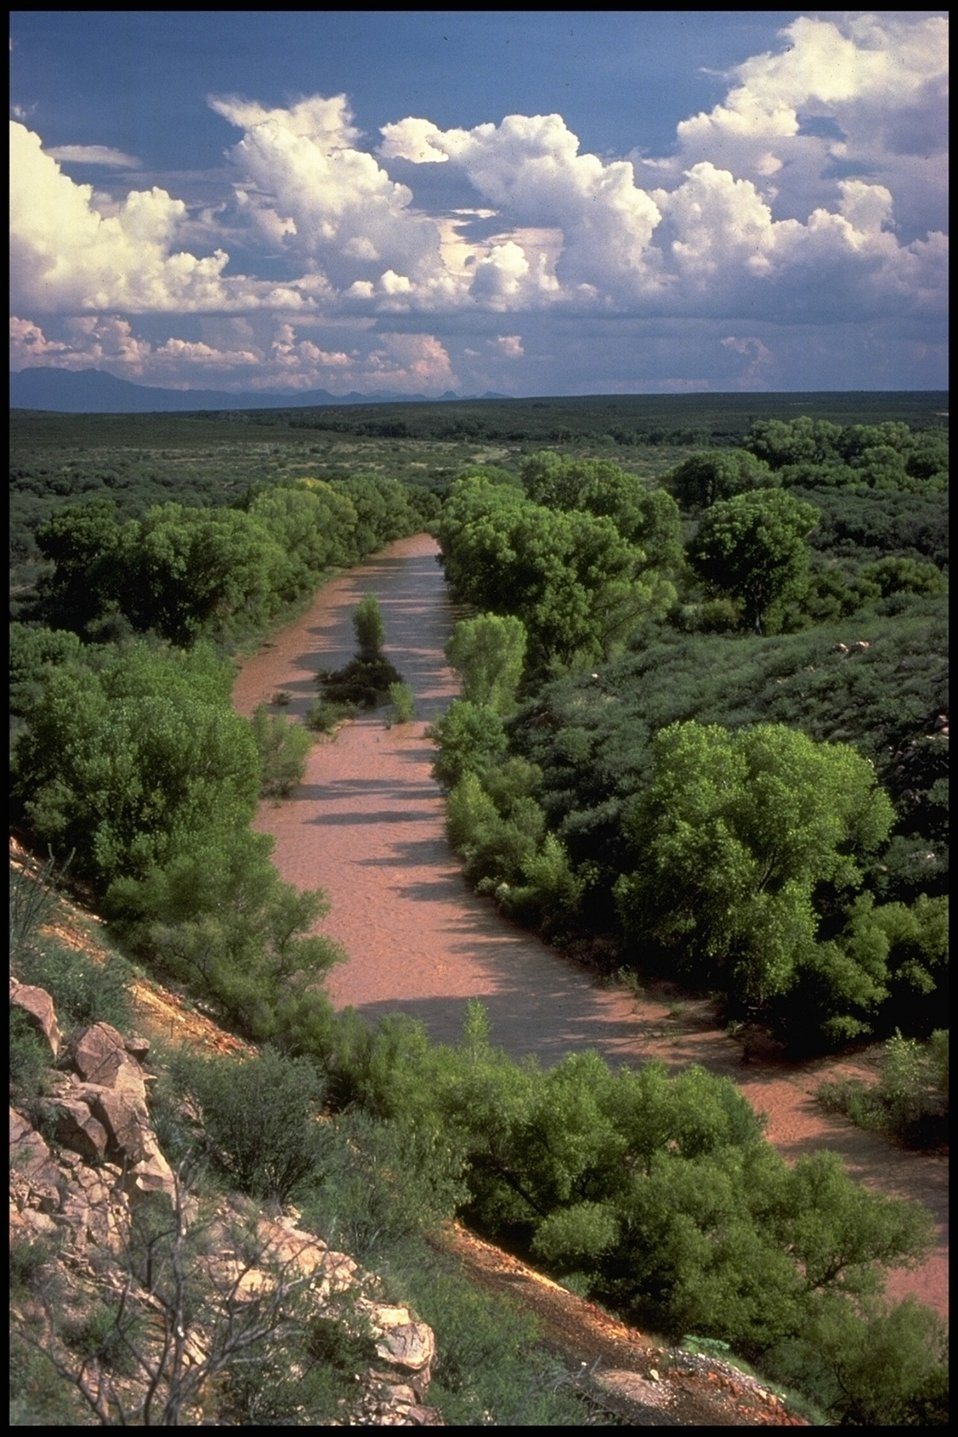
The San Pedro Riparian National Conservation Area, containing about 40 miles of the upper San Pedro River, was designated by Congress as a National Conservation Area (NCA) on November 18, 1988.